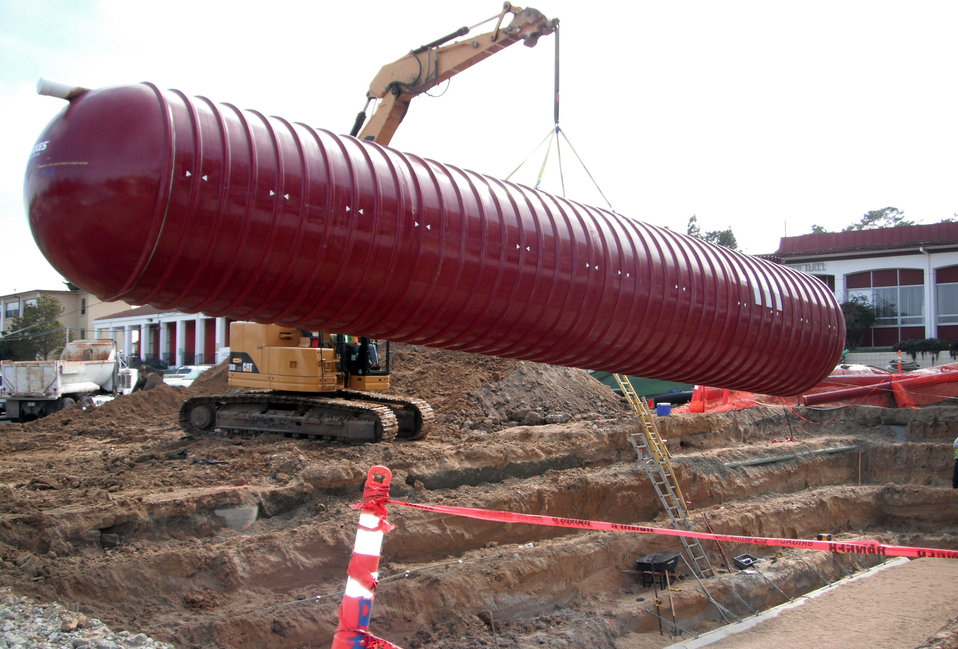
Going Green: Ancient technology helps Corps build green at Presidio

A 35,000-gallon tank is put into place next to a new general instruction building under construction at the Presidio of Monterey, Calif., March 25, 2013. The U.S. Army Corps of Engineers Sacramento District is overseeing construction of the building, which is designed to reach a silver rating under the Leadership in Energy and Environmental Design program. The 35,000-gallon tank will collect rain water from the building’s roof, which will then be used to help supply the building’s plumbing system.